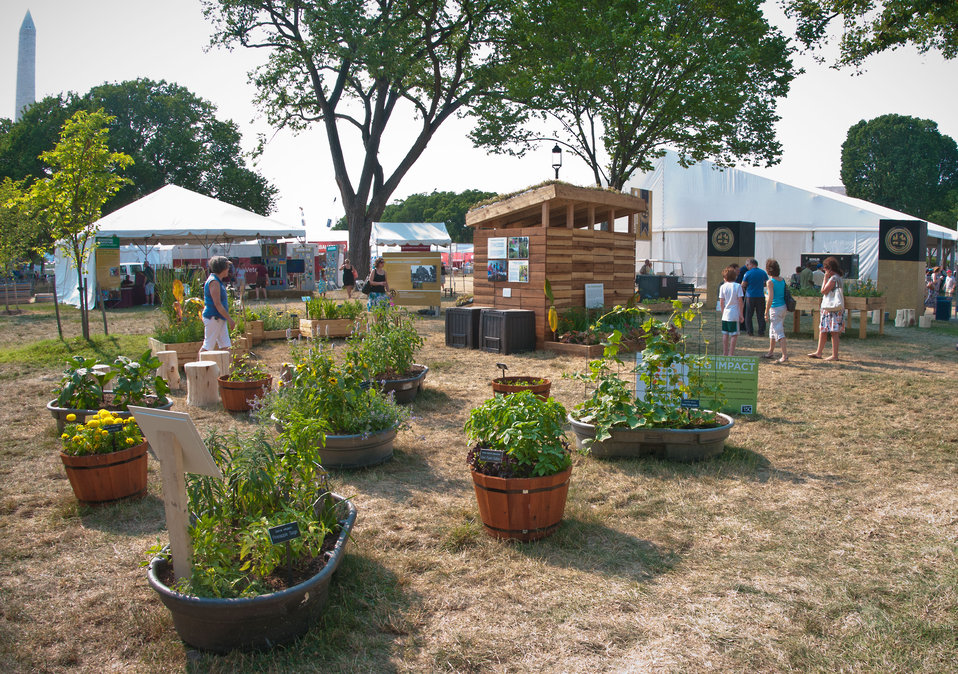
As people enter the “Campus and Community” section of the 2012 Smithsonian Folklife Festival, on the National Mall in Washington, D.C., on Thursday, June 28, 2012, they walk through the U.S. Department of Agriculture (USDA), People’s Garden Initiative's display of sustainable practices that nurture, maintain and protect the environment. The types of gardens demonstrated include all access (far right), edible (beyond shed), pollinator (far left), and container (front). These gardens surround a shed with sustainable features built with reclaimed materials, how to make and use compost, how to set up a rain barrel, and installing a green roof, 20-minute demonstrations on these sustainable practices are offered daily. One of the three themes this year is “Campus and Community.” It celebrates the 150 years of the USDA and the Land-Grant University System. The U.S. Department of Agriculture (USDA) and the Land-Grant system extend education across the country, contributing to American agriculture success and rural prosperity. “Campus and Community” has demonstrations, discussions, hands-on activities, and entertainment to that showcase the many ways that this partnership works to improve American agriculture and rural life.